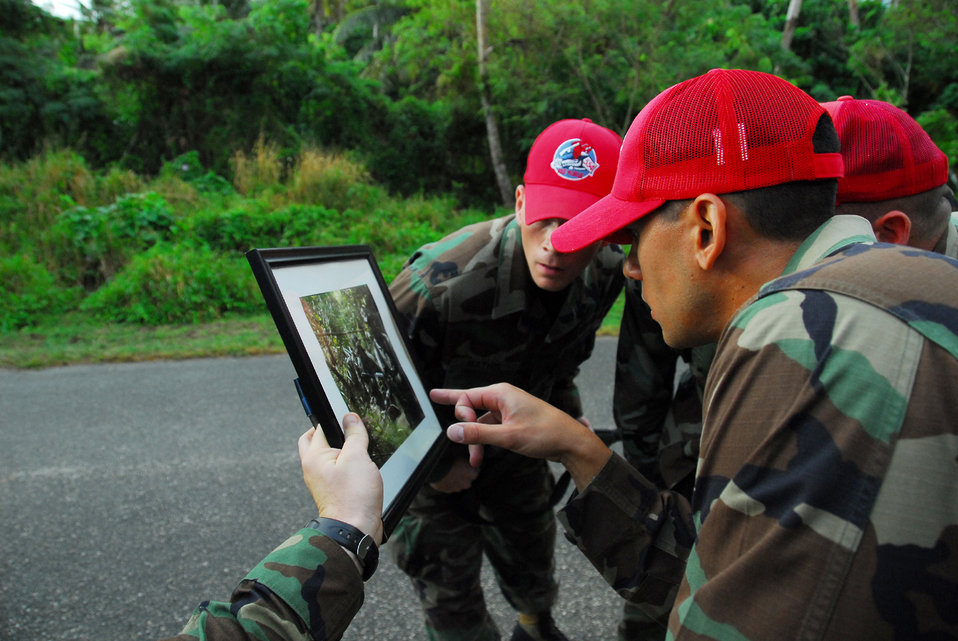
Competition challenges Airmen's warfighting abilities

Members of the 554th Red Horse Squadron study a photograph before loading and pushing a Humvee up the hill at Checkpoint 3 during the Warrior Day competition Jan. 25 at Andersen Air Force Base, Guam. At the top of the hill, one person was chosen to relay all the information they could remember from the photograph. More than 80 Airmen formed 21 teams to compete in the two-day competition.